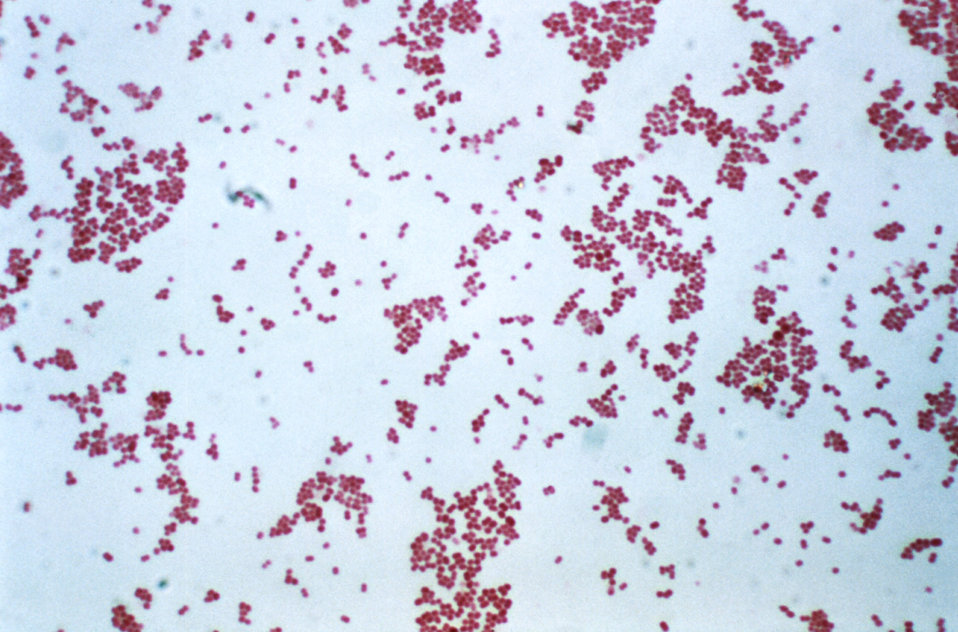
This photomicrograph reveals the presence of the Gram-negative bacteria, Neisseria subflava.